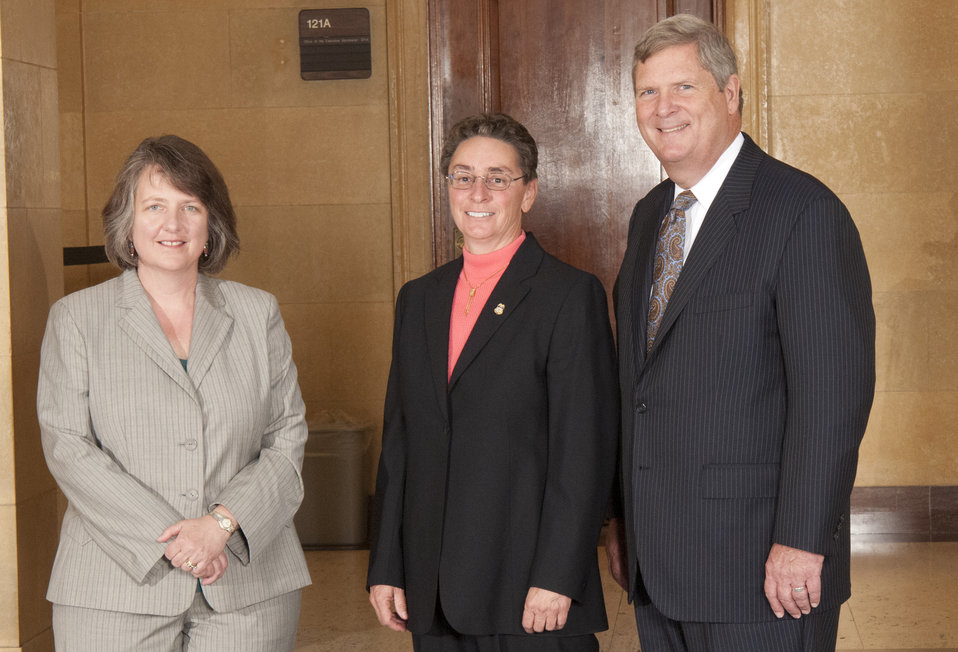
Agriculture Secretary Tom Vilsack and Deputy Agriculture Secretary Kathleen Merrigan with Brenda Schultz, Forest Service (FS) on the patio of the U.S. Department of Agriculture in Washington, D.C. on Wednesday, Sept. 12, 2012.